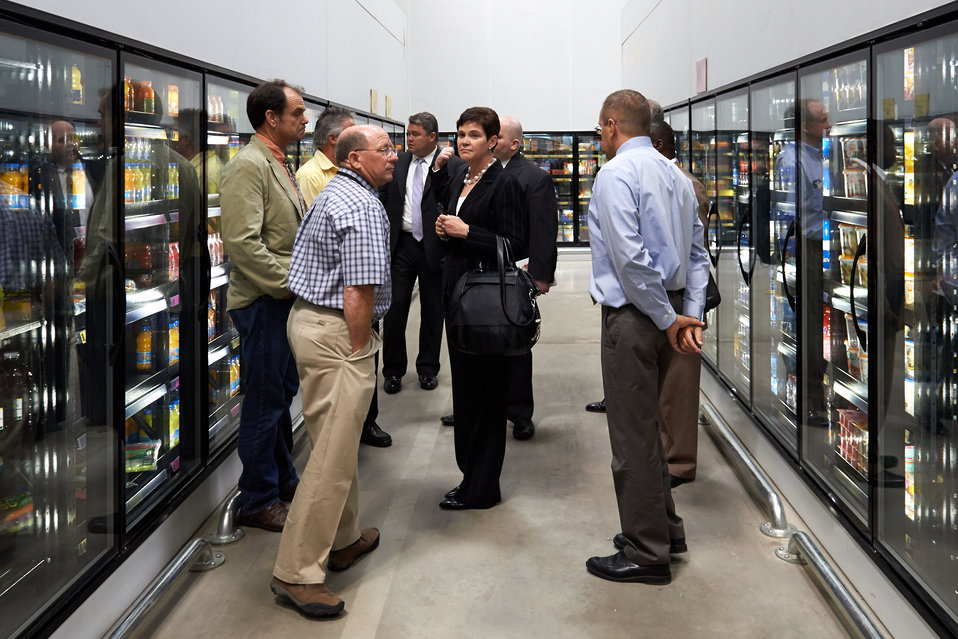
Agriculture Deputy Secretary Krysta Harden walks through market in Johannesburg, South Africa on Tuesday, Sep. 17, 2013. Agriculture Deputy Secretary Krysta Harden led a trade mission to the Sub-Saharan Africa Business Round Table to promote U. S. agricultural trade and investment in the region, which is a long-term goal of the initiative. The trade mission includes 17 U.S. companies and 15 agricultural trade associations that represent a variety of products such as snack foods, beverages, fruit, nuts, and more.